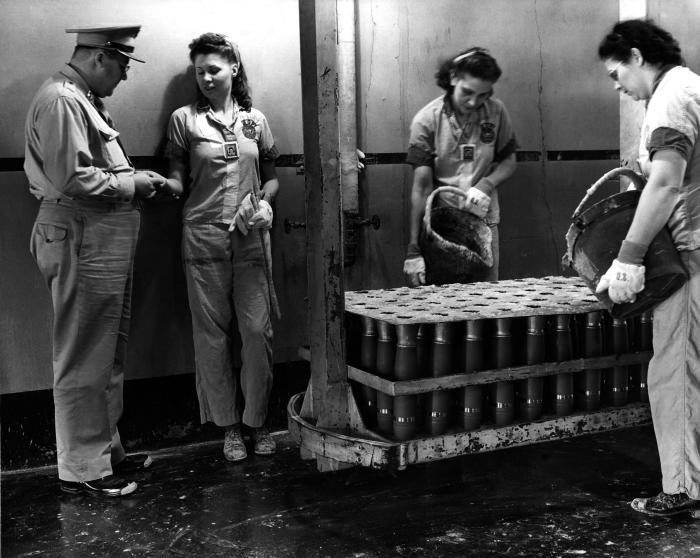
This photograph, provided by the Center for Disease Control's (CDC), National Institute for Occupational Safety and Health (NIOSH), depicted a male Public Health Service (PHS) officer as he was examining the hands of one of three female 'shell pourers', inside a military TNT (trinitrotoluene) ordnance factory. A poisonous chemical, TNT will irritate the skin upon contact, and actually will change the skin's color to a bright yellow-orange. Prolonged exposure leads to liver damage, anemia, enlargement of the spleen, and a compromised immune system, to name a few of its negative effects. Trinitrotoluene is also a known carcinogen. None of the women, or the officer, were wearing any protective filtered breathing masks. The women were wearing gloves.